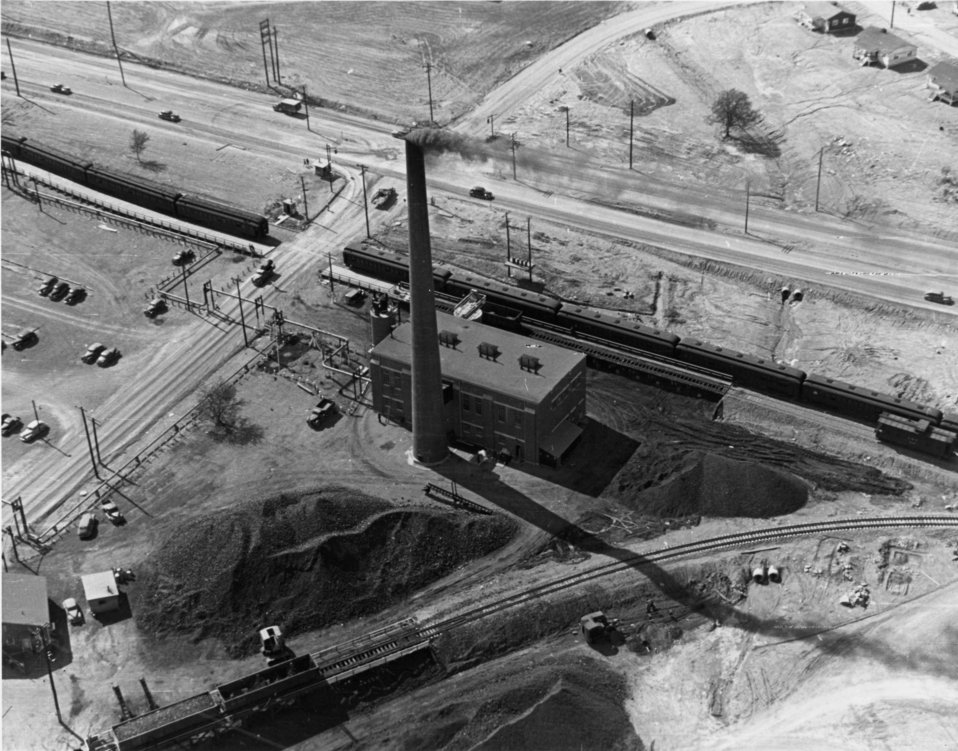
Aerial of Oak Ridge